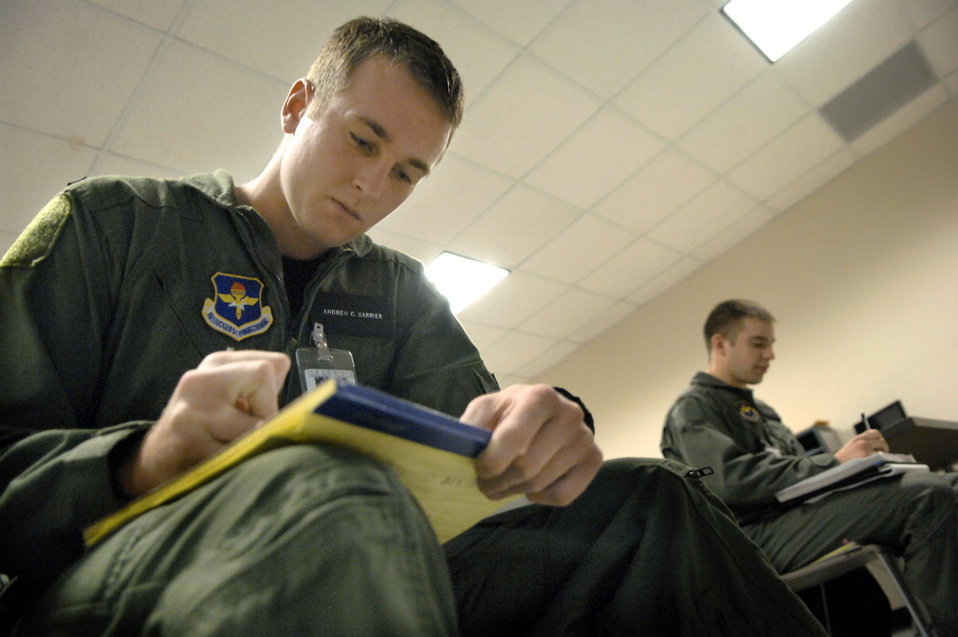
Making a pilot

Second Lt. Andrew Barrier takes a test April 7 during the Doss Aviation Initial Flight Screening Course in Pueblo, Colo. The course mission is to screen aviation candidates and develop student's aviation skills. From day one the students are tested physically and mentally in a high-intensity environment.